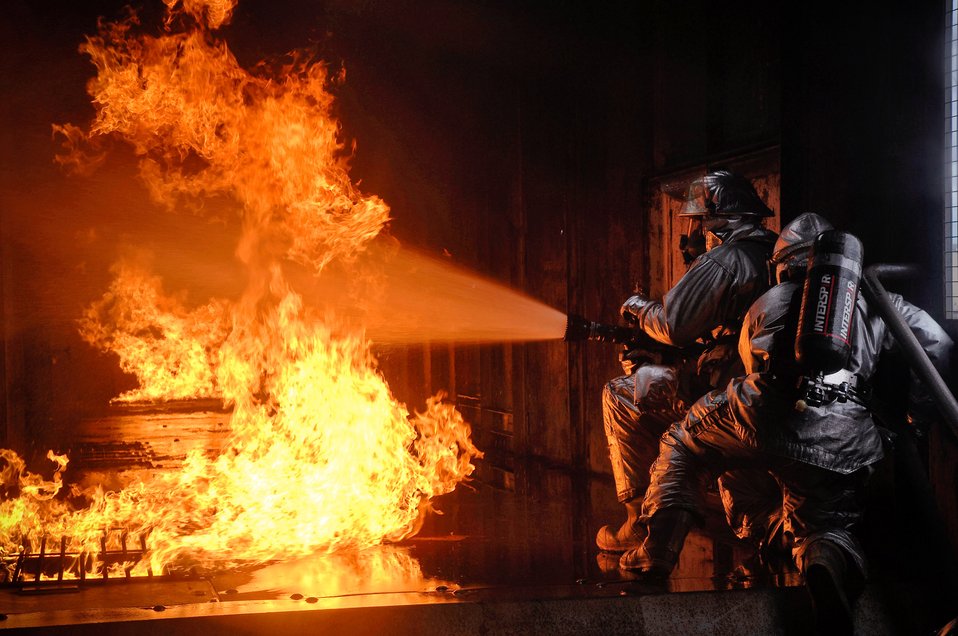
Firefighters extinguishing a fire

Firefighters from the 48th Civil Engineer Squadron extinguish a simulated battery fire inside an aircraft fire trainer March 8 at Royal Air Force Mildenhall, England.